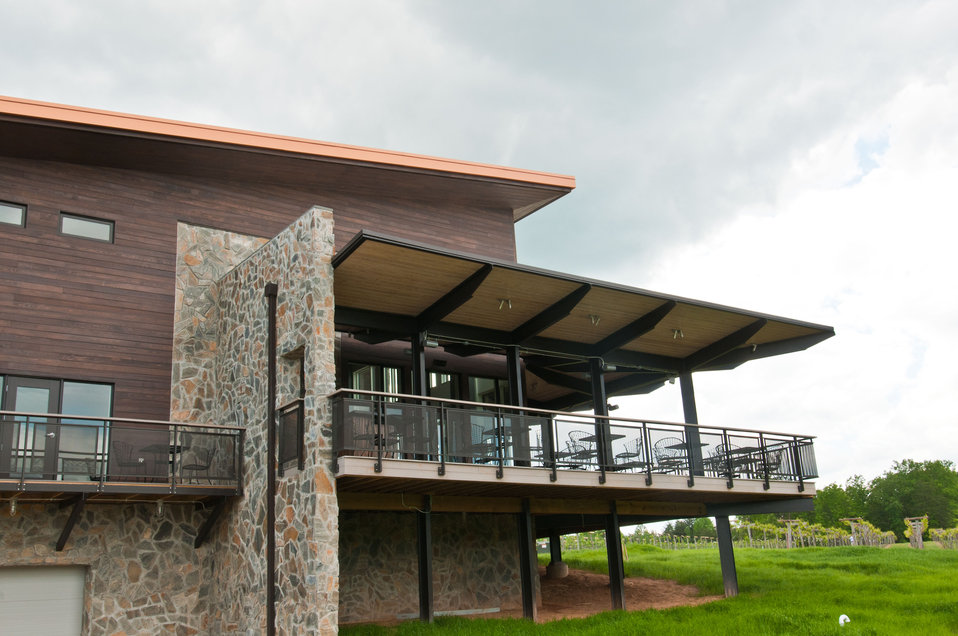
Cooper Vineyards in Louisa, VA is the first winery on the East Coast and the second in the country to be awarded the fourth and highest, Platinum certification by Leadership in Energy and Environmental Design (LEED).

From a Virginia Wine Board Marketing Office press release, “The process of building a LEED platinum certified building was initially more expensive and arduous than co-owners, Jacque Hogge, MD and Geoffrey Cooper, MD expected, but they were able to get financial assistance from the United States Department of Agriculture. “Know that there are grants available to help with the costs of sustainable building projects,” Hogge advises to other potential green wineries. Cooper Vineyards received 2 of the 3 USDA (U.S. Department of Agriculture Rural Development (RD) Rural Energy Financing program) grants awarded in Virginia in 2010 to help with the expenses of their construction.”

Rural Energy Financing program focuses on loan guarantees, loans and grants to agricultural producers, businesses, cooperatives and rural residents for renewable energy systems and to make energy efficiency improvements.
The tasting room and building collects rainwater from the roof; uses low flow water fixtures to reduce usage by 40%; utilizes structurally insulated panels for the roof and walls; heats and cools the entire building using a geothermal system that includes pipes that are embedded in the parking lot; low-voltage LED lighting with daylight and occupancy sensors provide ample light when it is needed; a solar panel array provides more than 15% of the energy needs for the building, and much of the construction materials are from local and recycled material sources. For more information about USDA please go to www.usda.gov, Rural Development and Rural Energy Financing. LEED was developed by the U.S. Green Building Council (USGBC) is a 501 c3 non-profit organization committed to a prosperous and sustainable future for our nation through cost-efficient and energy-saving green buildings.